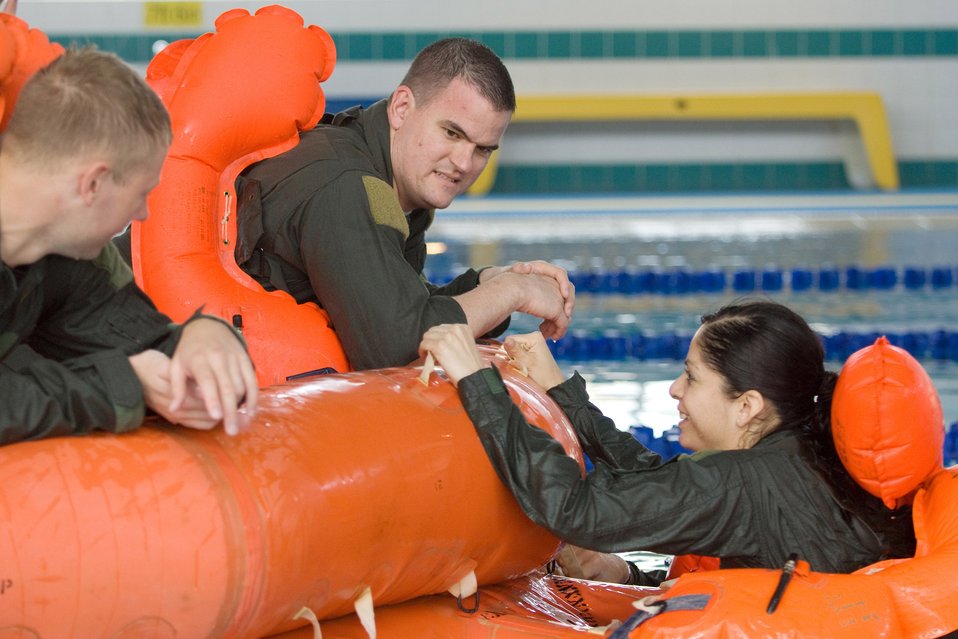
No easy day at the pool

Staff Sgt. Wilma Alvarez climbs into a 20-person life raft during during water survival refresher training recently at the natatorium indoor pool at Yokota Air Base, Japan. Survival, evasion, resistance, and escape specialists teach the course to aircrew members at least once every three years. Sergeant Alvarez is a loadmaster with the 36th Airlift Squadron.